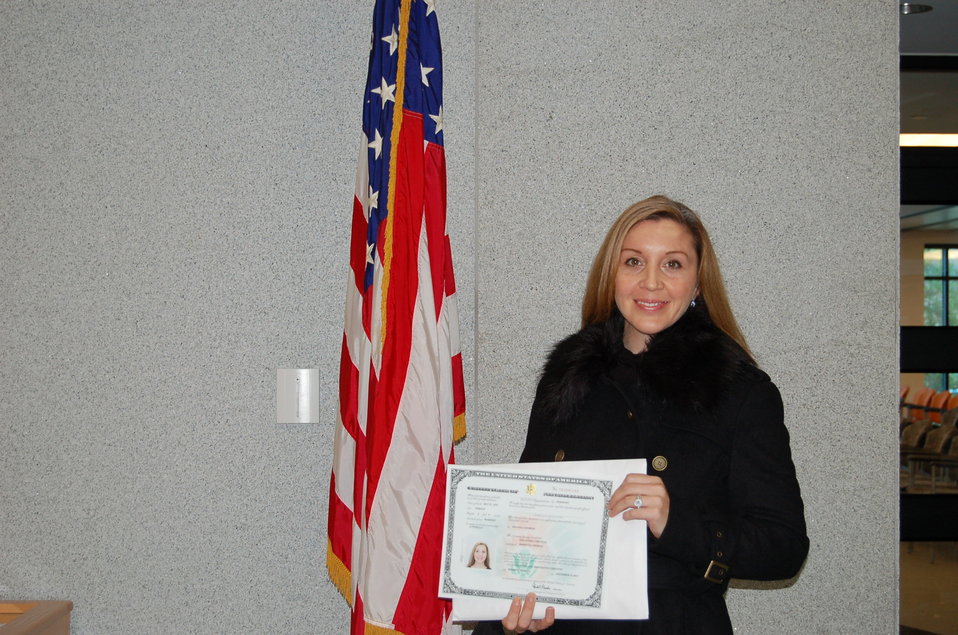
New Citizens